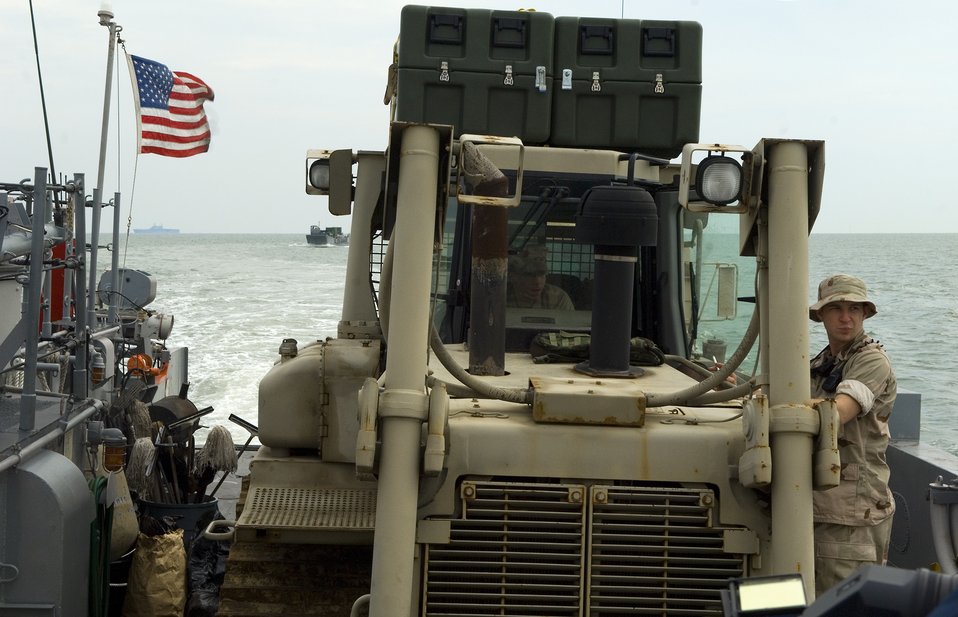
USS Nassau delivers critical help to Galveston

A utility landing craft carries members of Beachmasters Unit Two from the amphibious assault ship USS Nassau to the beaches of Galveston, Texas to begin disaster relief efforts Sept. 18. The Nassau is anchored off Galveston to provide disaster response and aid to civil authorities as directed in the wake of Hurricane Ike.